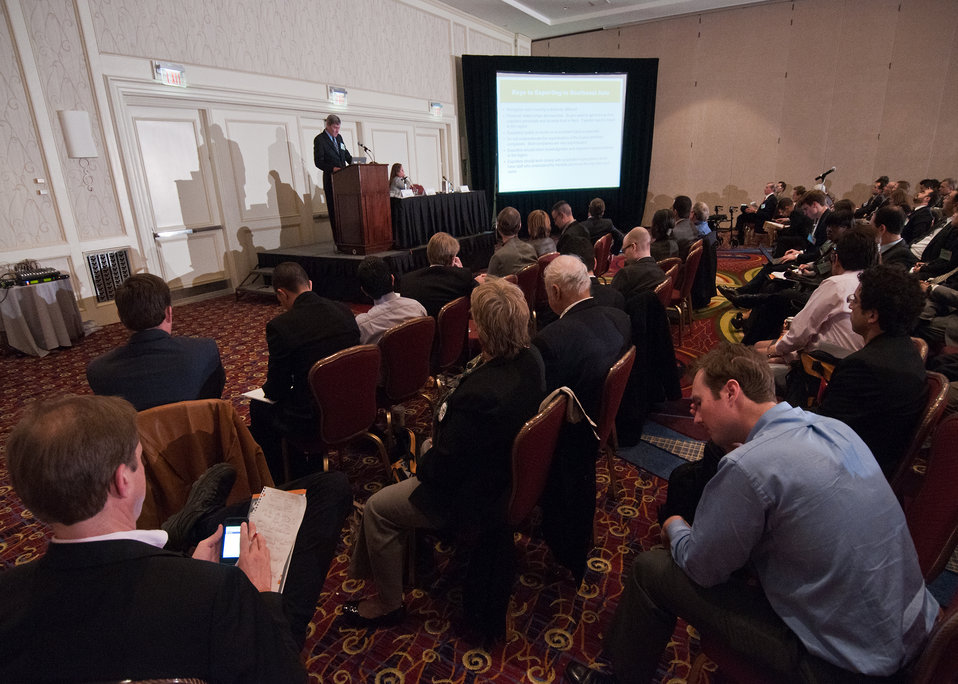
John Baize, President, John C. Baize and Associates, Falls Church, VA, discusses Southeast Asia’s emergence as a top U.S. market during the, “Export Opportunities in Rapid Growth Markets” session during the World Agricultural Outlook Forum in Crystal City, VA, on Friday, February 25, 2011.